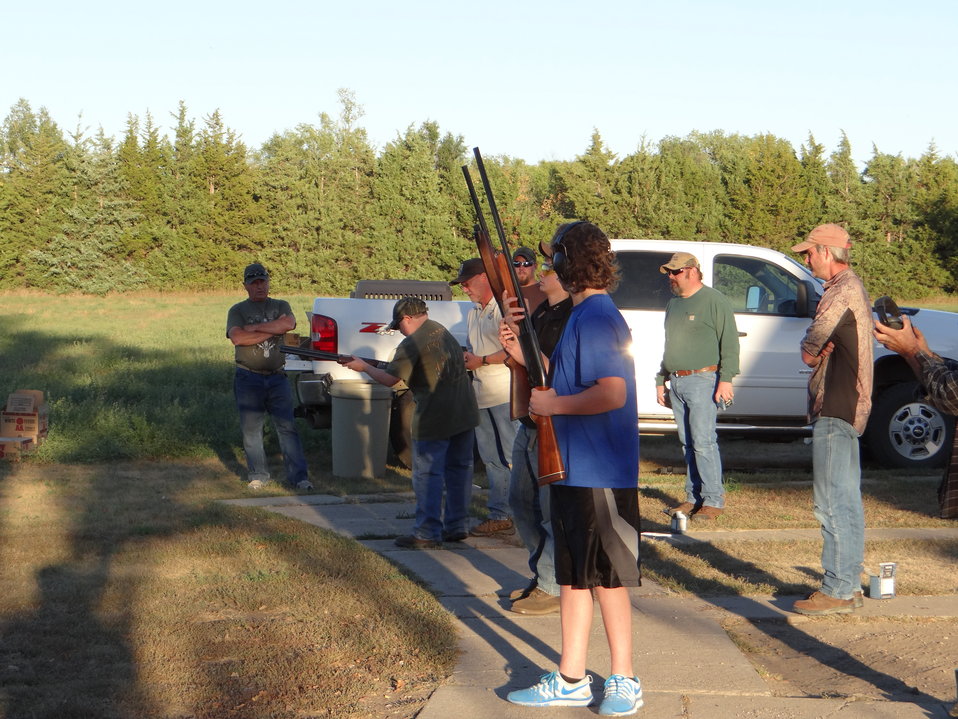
Trap Shooting

2013 Huron WMD Youth Waterfowl Hunt. Trap shooting prior to hunt on day one in Huron, SD. Trap shoot improves shooting accuracy and reduces crippling birds.The Huron Wetland Management District hosted its 10th annual Youth Waterfowl Hunt in September. This event provided 28 youth hunters between the ages of 12 – 15 and (new) mentored hunters (10-11), an opportunity to learn about various migratory birds and their habitats, duck and goose calling, decoys, and waterfowl hunting techniques. This event continues to be a success each year due to the dedicated volunteers within the community of Huron.